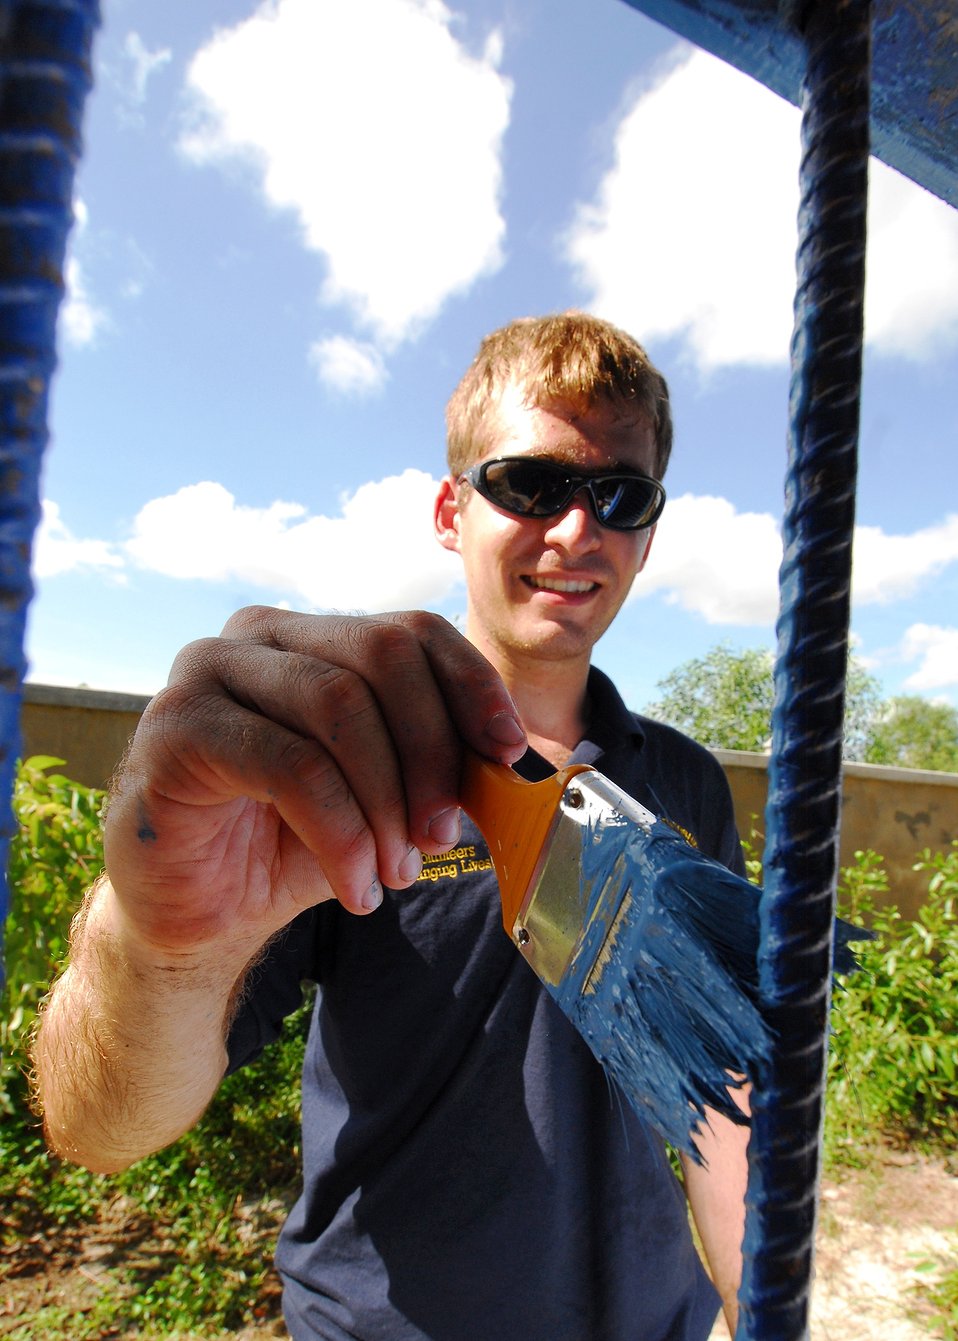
Volunteer Shaun Masavage Paints a Window

Shaun Masavage, a volunteer with the University of California, San Diego Pre-Dental Society, paints a window during an engineering civic action event at O. Tres Chas Primary School in Sihanoukville, Cambodia, on June 24, 2010. The Military Sealift Command hospital ship, USNS Mercy (T-AH 19), is in Cambodia in support of Pacific Partnership 2010.